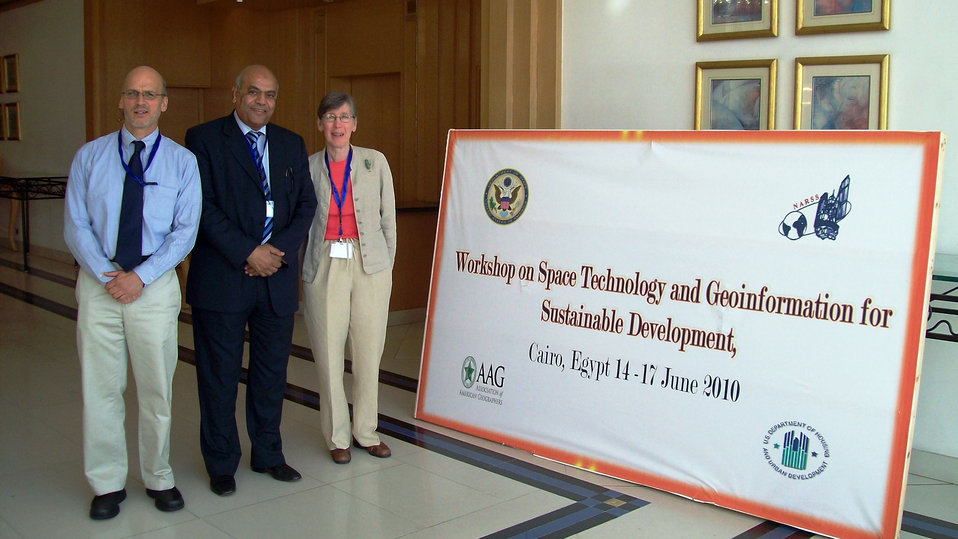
U.S. Representatives Pose for a Photo at the Workshop on 'Space Technology and Geoinformation for Sustainable Development'

U.S. representatives pose for a photo during three-day workshop on “Space Technology and Geoinformation for Sustainable Development” in Cairo, Egypt, on June 17, 2010.